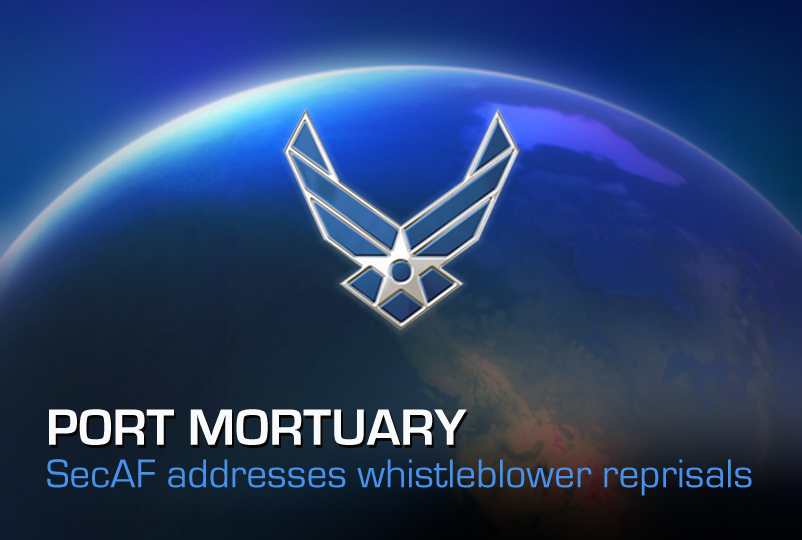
Port Mortuary